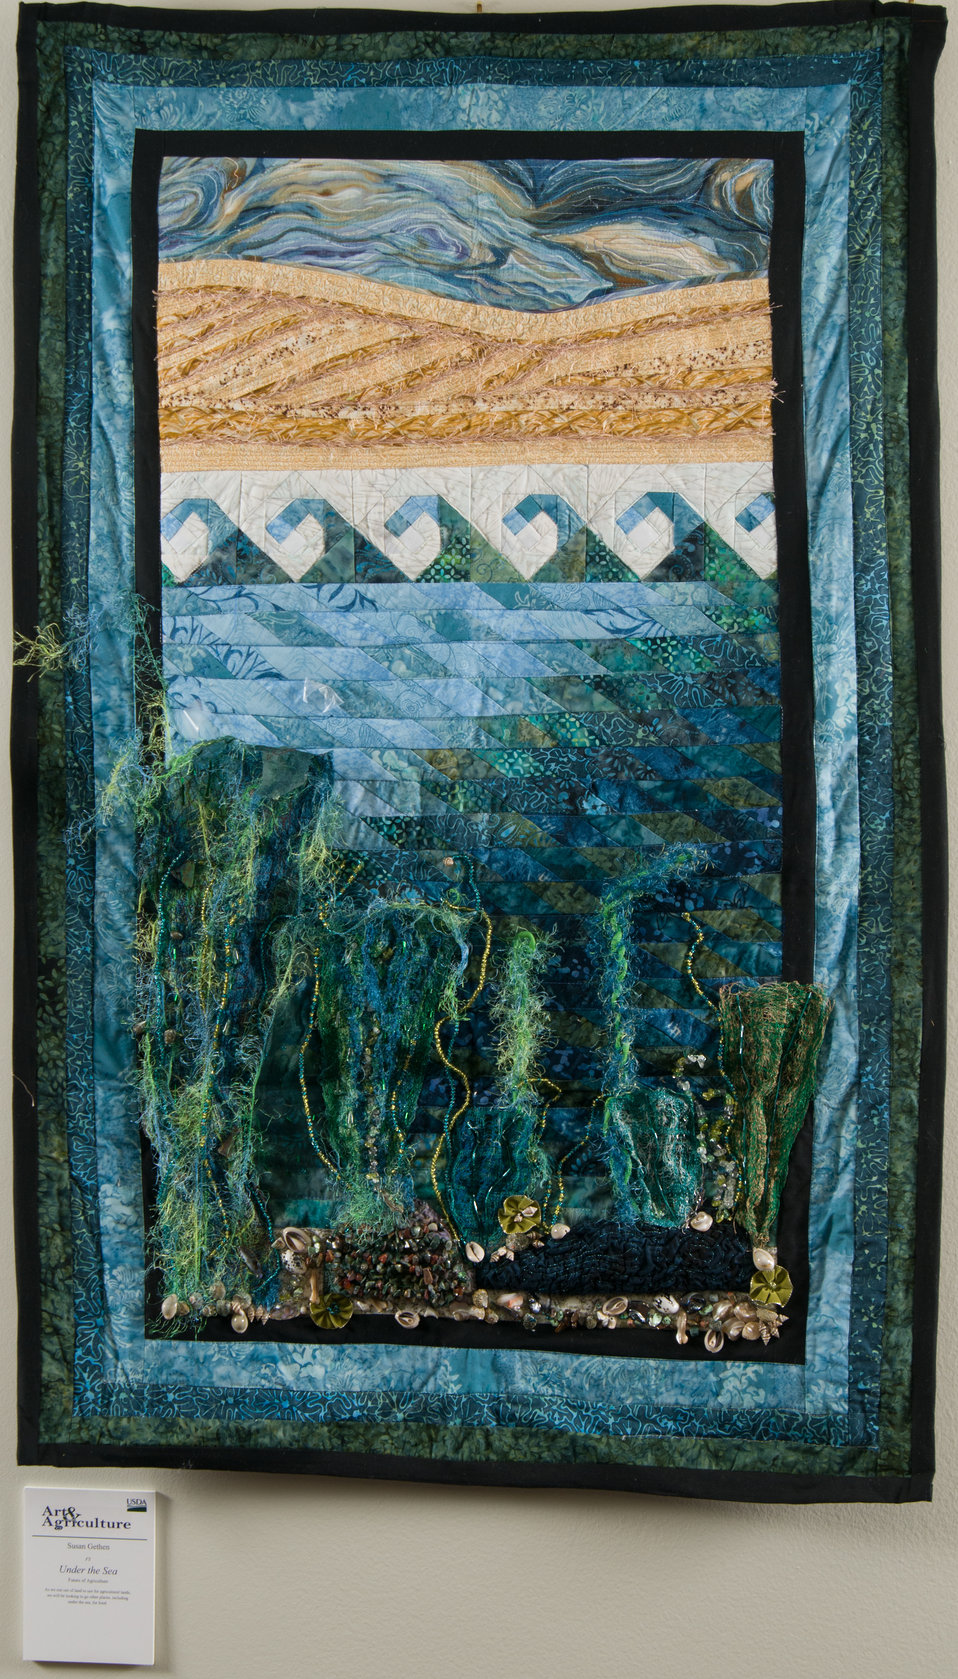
Online Viewer's Choice entries of the 2013 Art & Agriculture, Tuesday, July 9, 2013, in the South Building, Washington, D.C. Themes were expressed by employees from across the department and the contest was open to full-time and part-time USDA employees. Winning artwork will be displayed till the end of the year. U.S. Artistic expression is a creative outlet that is vital for an individual to grow and develop.